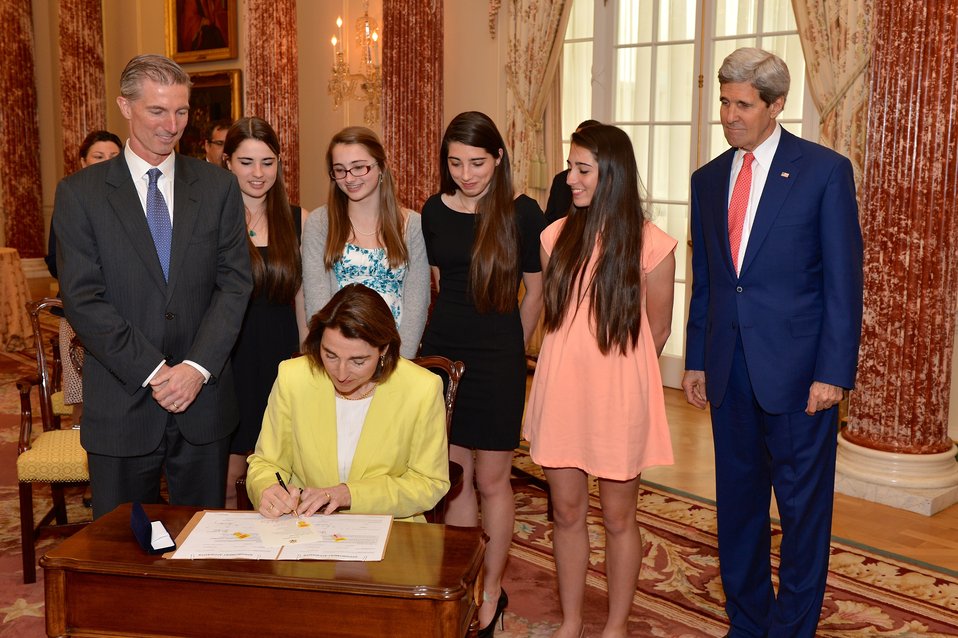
Sarah Sewall Signs Her Appointment Papers to Become Under Secretary of State for Civilian Security, Democracy, and Human Rights

With U.S. Secretary of State John Kerry and her family looking on, Sarah Sewall asigns her appointment papers to become Under Secretary of State for Civilian Security, Democracy, and Human Rights, at the U.S. Department of State in Washington, D.C., on April 14, 2014.